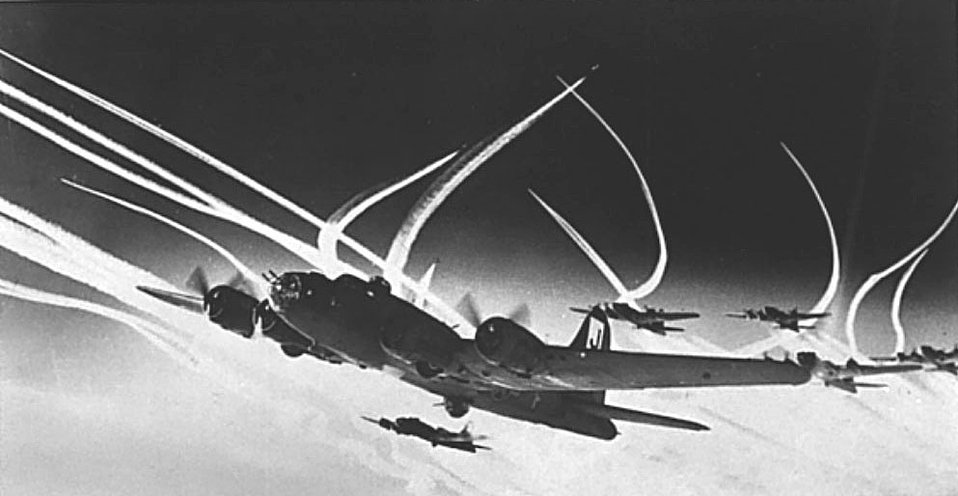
B-17s

1940s -- B-17 Flying Fortresses